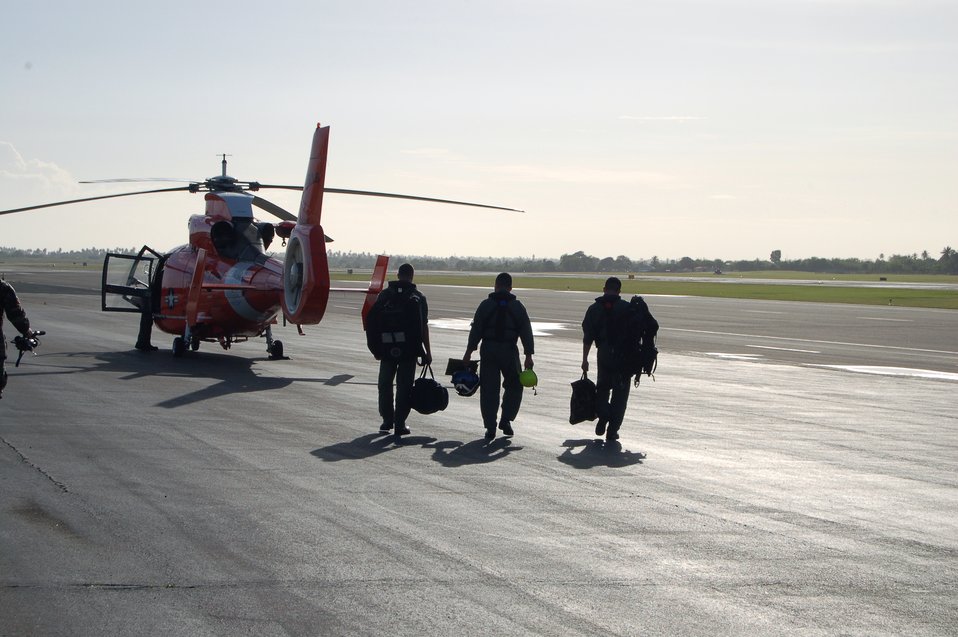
Coast Guard pilot traces roots to Air Force education opportunities

Coast Guard Lt. Cmdr. Juan Lopez (center) and two other Coast Guardsmen walk out to an HH-65C Dolphin March 21 at Coast Guard Air Station Borinquen, Puerto Rico. Their mission was to work with the Puerto Rican Police Department and help them train on how to dive out from a helicopter to rescue people at sea. A former Senior Airman, Commander Lopez is an aircraft commander and the assistant operations officer at the air station. Coast Guard Air Station Borinquen is based at what used to be Ramey Air Force Base, which closed in 1973.